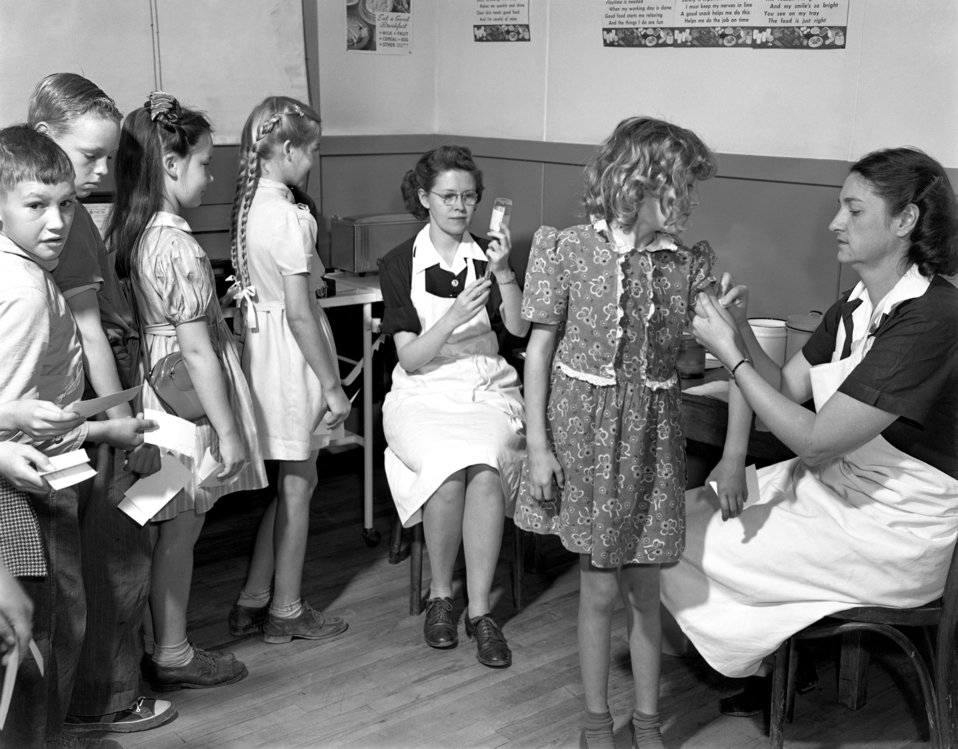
Public Health Nursing Oak Ridge 1947

3392-e DOE photo by Ed Westcott 4-15-1947 Publicity for National Nurse Week Oak Ridge Tennessee